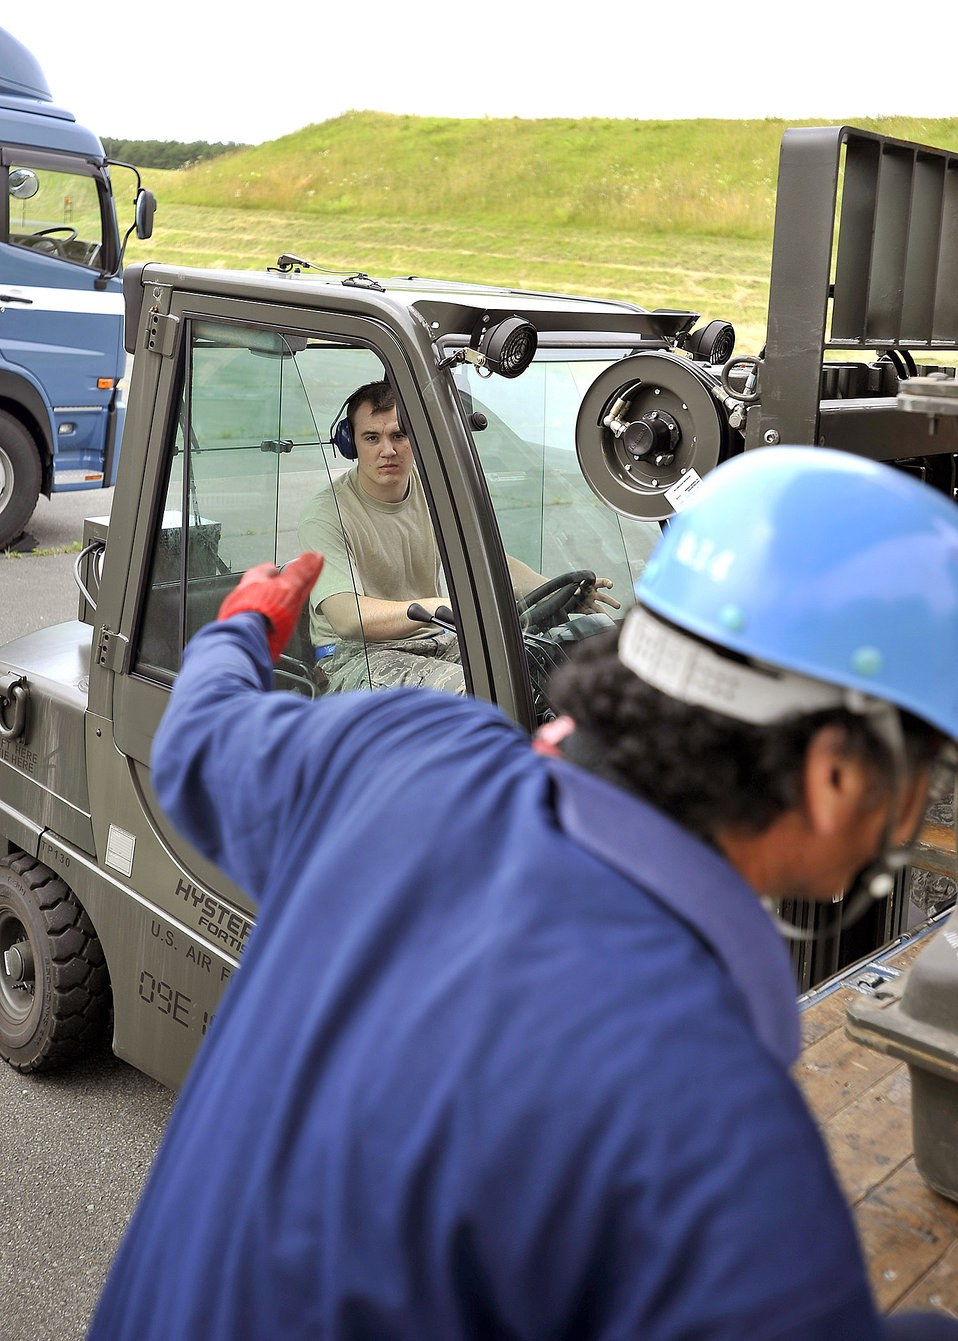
Munitions disposal

Senior Airman Derek White awaits instruction from a Japanese truck driver while loading munitions July 13, 2010, at Misawa Air Base, Japan. Airmen there moved more than 700 tons of munitions in an effort to dispose of unserviceable and unused items. Airman White is a munitions systems specialist with the 35th Maintenance Squadron.